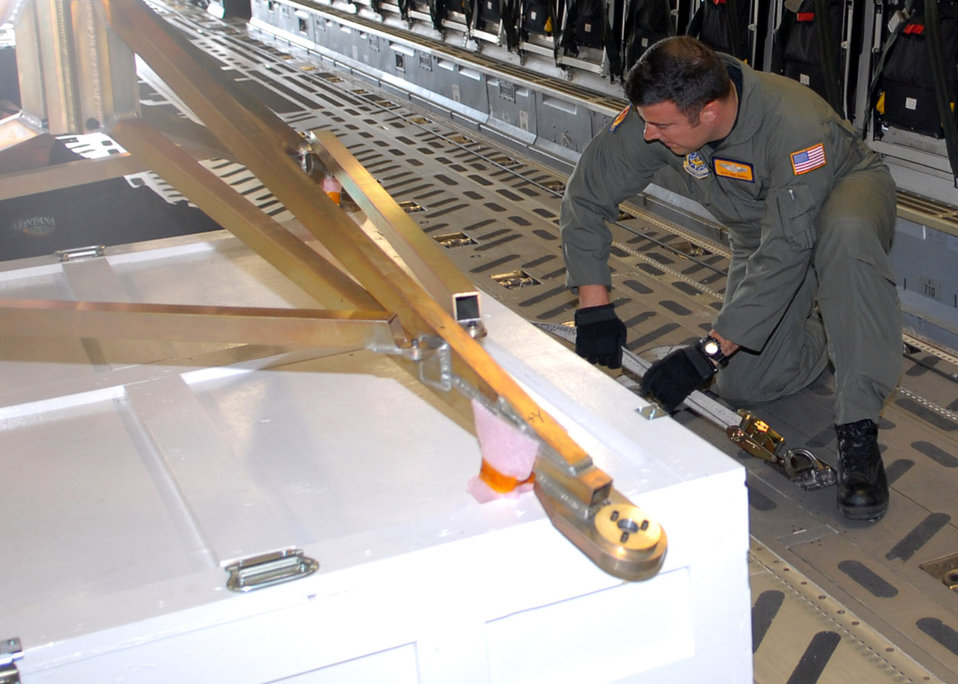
Charleston C-17 transports NASA's Phoenix Mars Lander

Staff Sgt. Mike Morris secures support equipment for NASA's Phoenix Mars Lander in a C-17 Globemaster III May 7 at Buckley Air Force Base, Colo. The lander, which was built at Lockheed Martin Space Systems Company's Waterton Canyon facilities in Littleton, Colo., was loaded on a C-17 for transportation to NASA's Kennedy Space Center in Florida for final test and launch preparations. The Phoenix lander is slated for liftoff aboard a Delta II launch vehicle in early August. Sergeant Morris is a loadmaster with the 16th Airlift Squadron at Charleston Air Force Base, S.C.